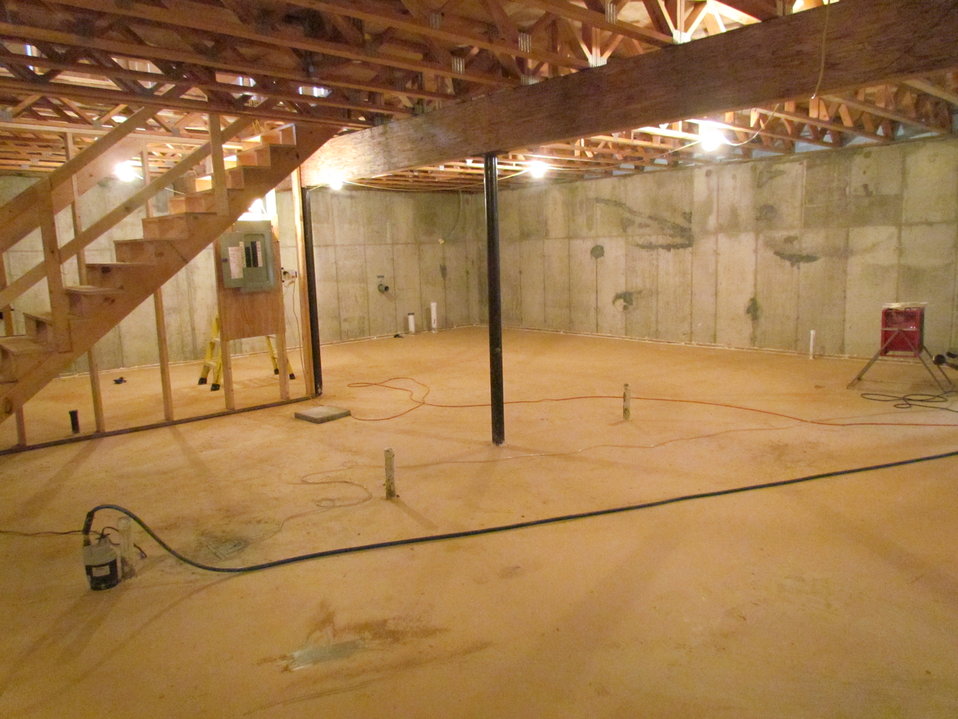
Net-Zero Energy Residential Test Facility - Photo of basement with fan being used to circulate air to minimize potential of mold growth during curing of basement slab.